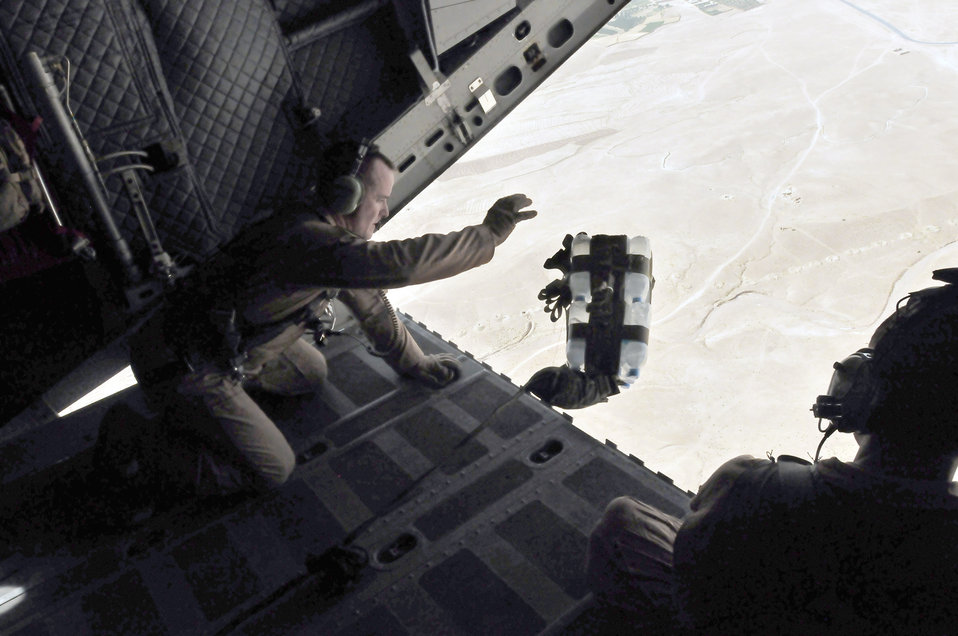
C-27 over Afghanistan

Master Sgt. Chris Ringland thrusts the cargo out as Staff Sgt. Talon Martin watches during an airdrop July 1, 2010, over Afghanistan. Sergeant Ringland is with the 438th Air Expeditionary Advisory Group and Sergeant Martin is with the 538th Air Expeditionary Advisory Squadron.